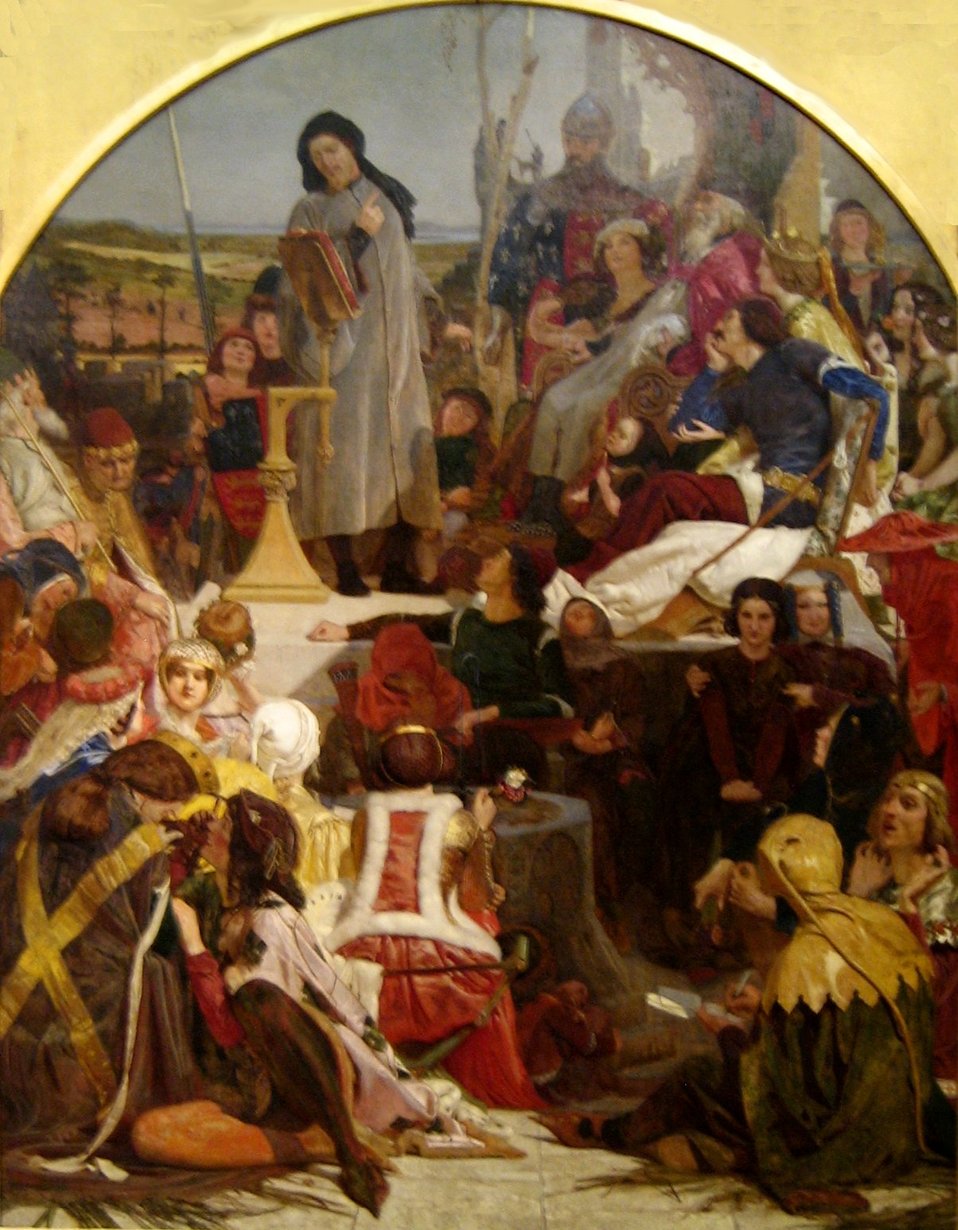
'Chaucer at the Court of Edward III', oil on canvas painting by Ford Madox Brown, 1847-1851, Art Gallery of New South Wales